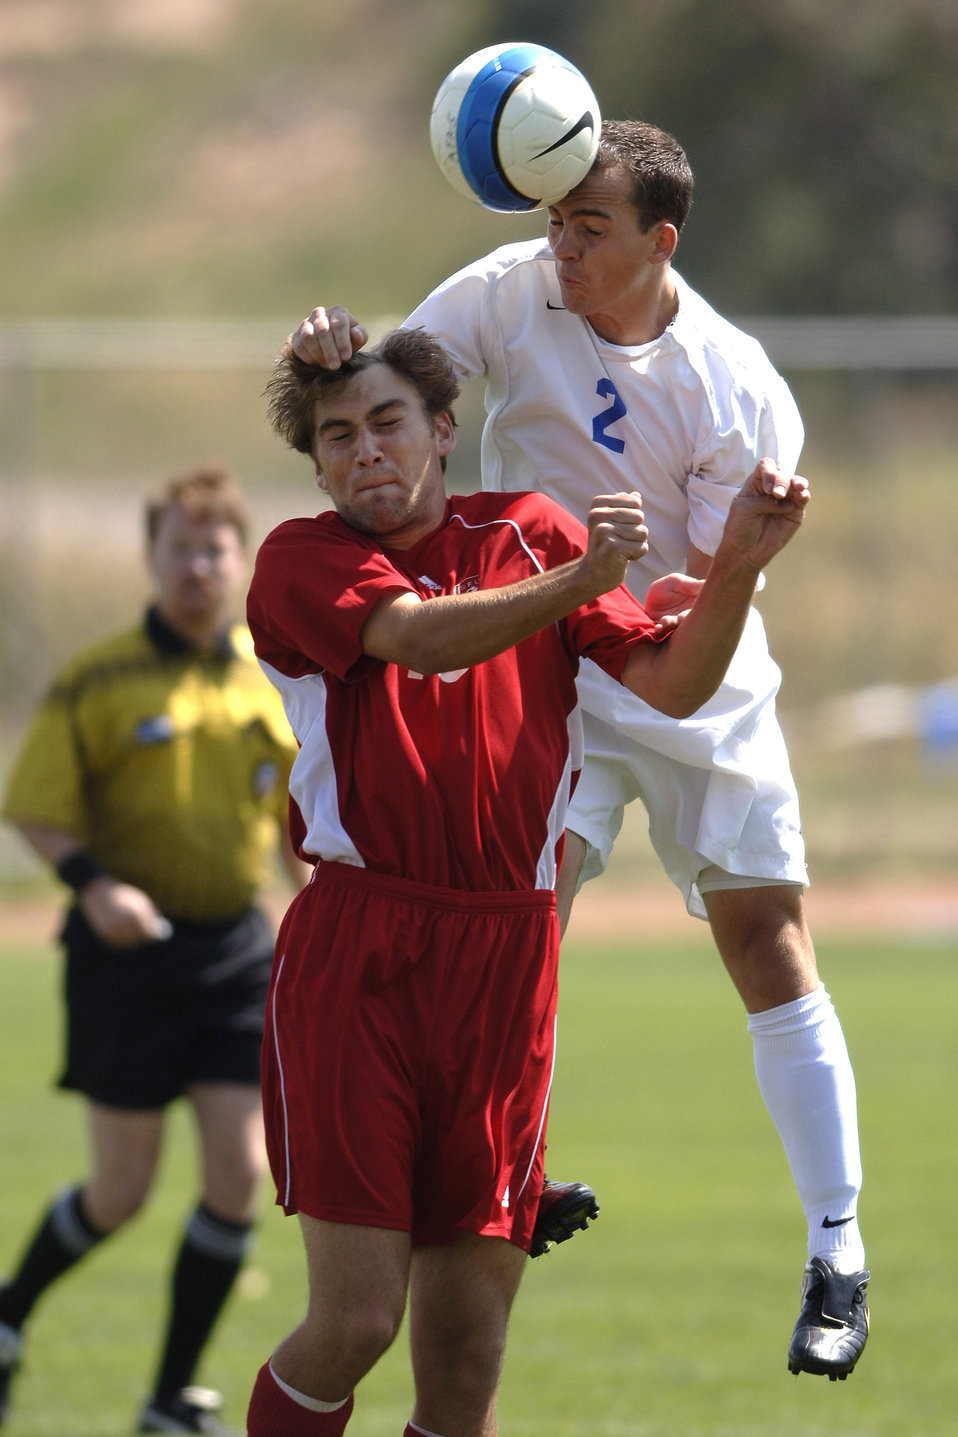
Falcons shut out St. Francis in soccer action

Senior Andy Nigro has the upper hand as he heads the ball. Air Force posted its second consecutive shutout with a 1-0 victory over St. Francis University in men's soccer action Sept. 9 at the U.S. Air Force Academy Cadet Soccer Stadium in Colorado Springs, Colo. With the victory, Air Force improved to 2-2 this season, while St. Francis fell to 1-3.